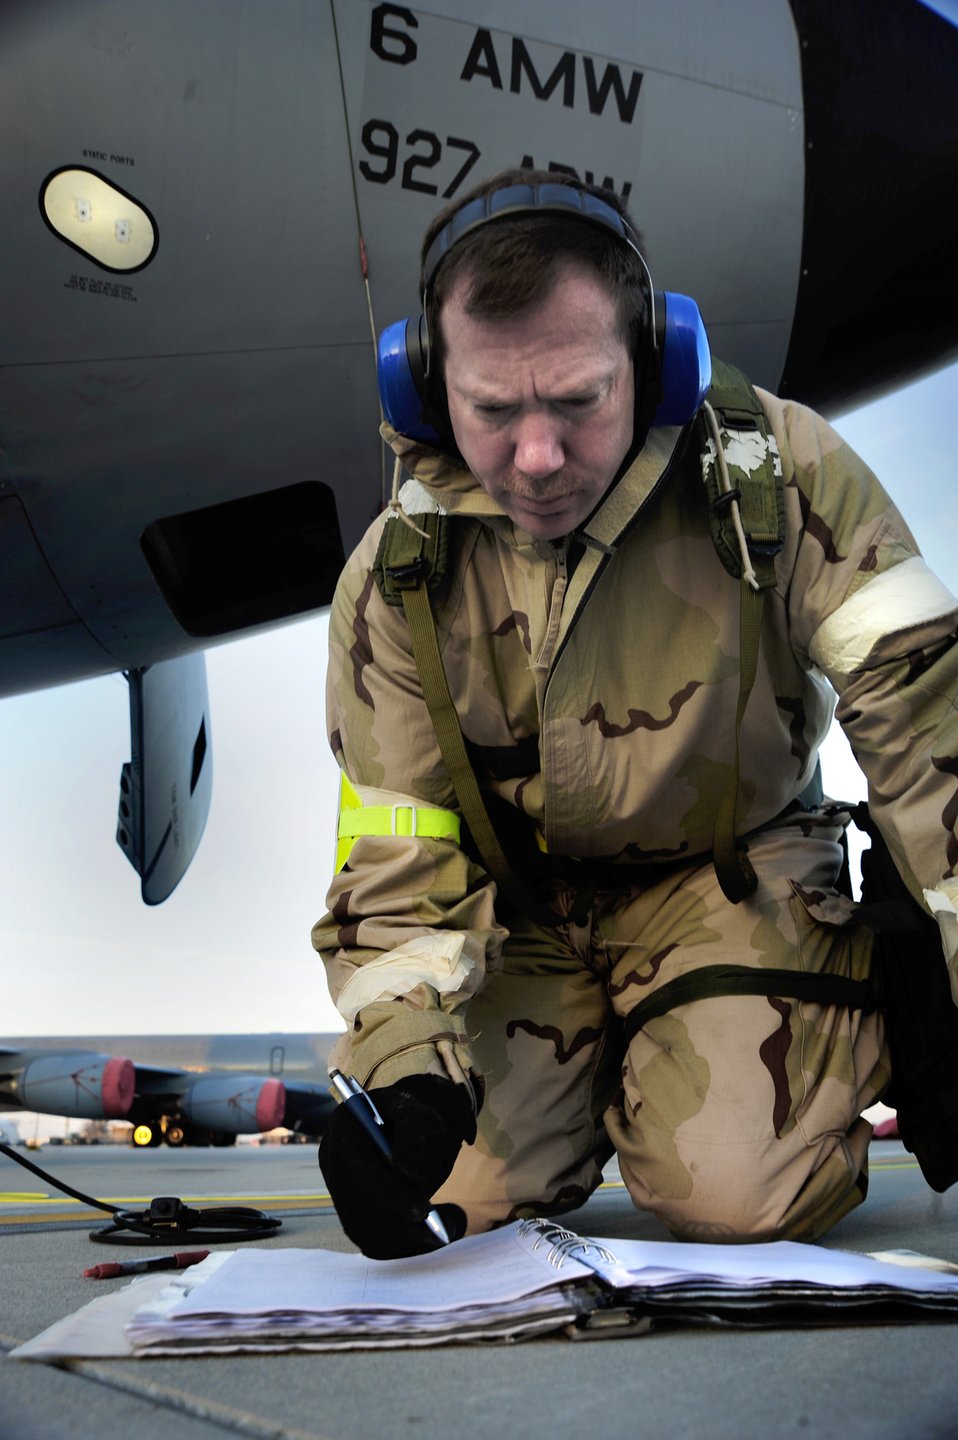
KC-135 Stratotanker maintenance

Tech. Sgt. James Etter completes a maintenance checklist for a KC-135 Stratotanker Jan 27, 2011, during an operational readiness inspection at the Savannah Combat Readiness Training Center in Savannah, Ga. Sergeant Etter is assigned to the 112th Aircraft Maintenance Squadron.